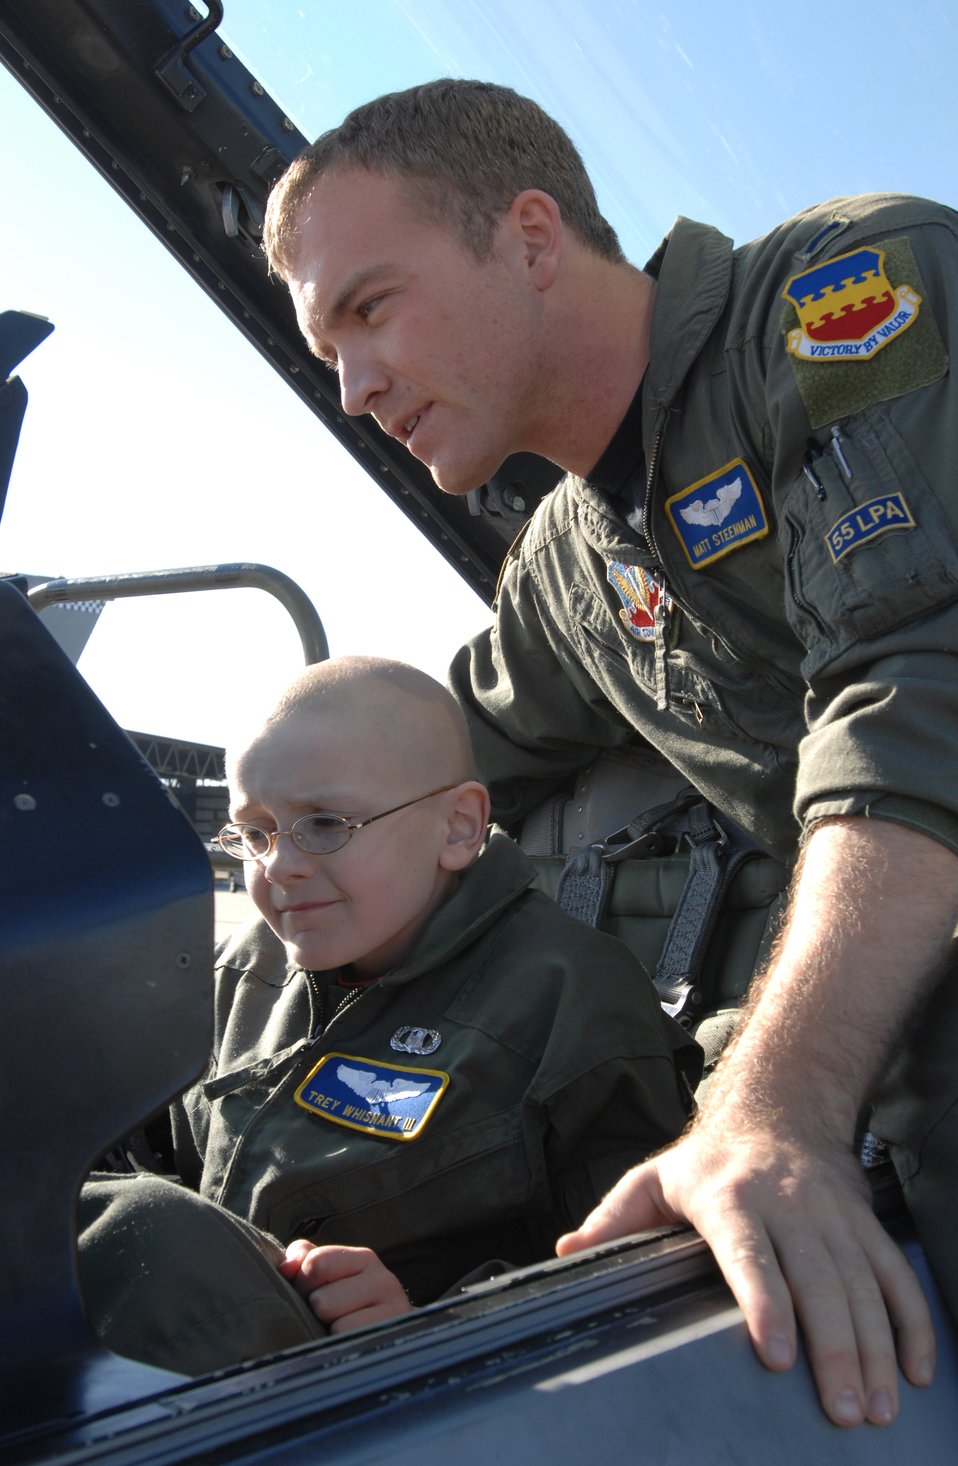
Pilot for a day

First Lt. Matthew Steenman explains to Pilot for a Day participant Trey Whisnant III the basic components of a cockpit on an F-16 Fighting Falcon, Dec. 15, at Shaw Air Force Base, S.C. The Pilot for a Day program allows youngsters with serious illnesses to experience once-in-a-lifetime opportunities.